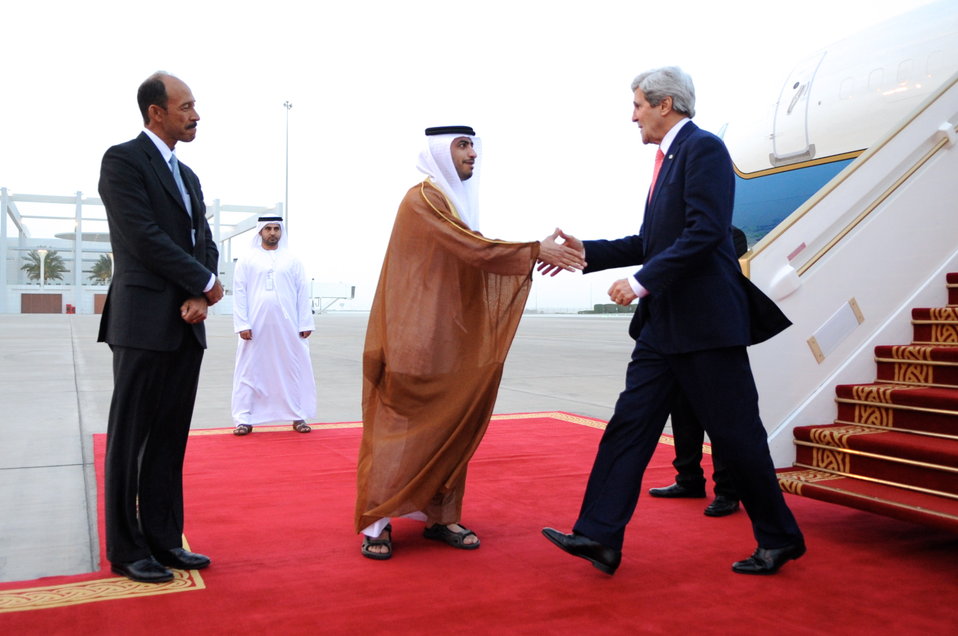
Secretary Kerry is Greeted Upon Arrival in UAE

Assistant Secretary for Protocol Affairs for the United Arab Emirates Shibab Al Faheem and U.S. Ambassador to the UAE Michael Corbin greet U.S. Secretary of State John Kerry upon his arrival in Abu Dhabi, United Arab Emirates on February 17, 2014.